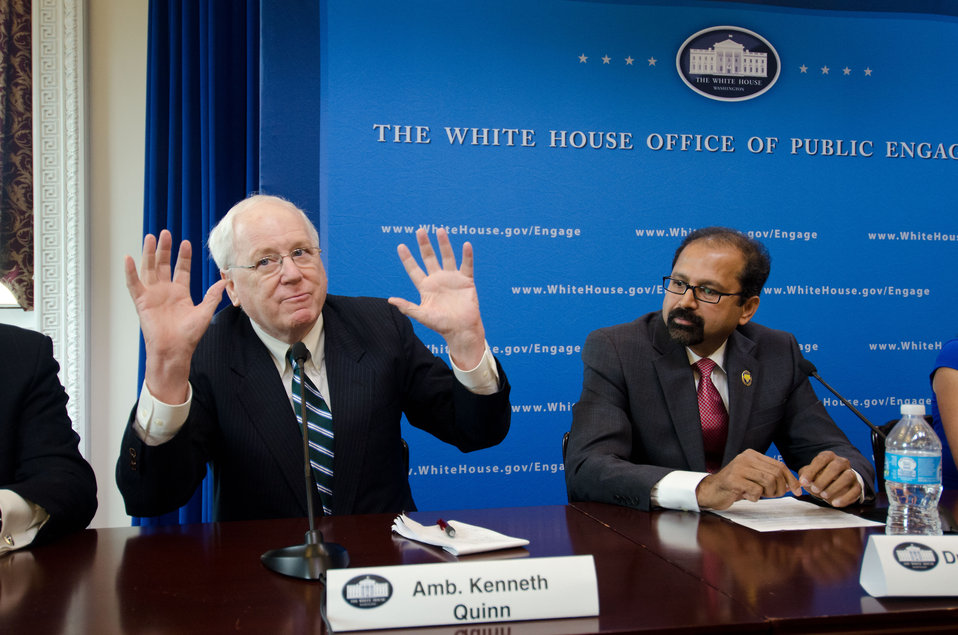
Former U.S. Ambassador to Cambodia and President of the World Food Prize Foundation Kenneth Quinn is one of eleven honorees recognized for his efforts to reduce hunger and increase food security in the U.S. and internationally at the White House Champions of Change Strengthening Food Security at Home and Abroad Event held at the White House on Thursday, September 6, 2012, in Washington, D.C.